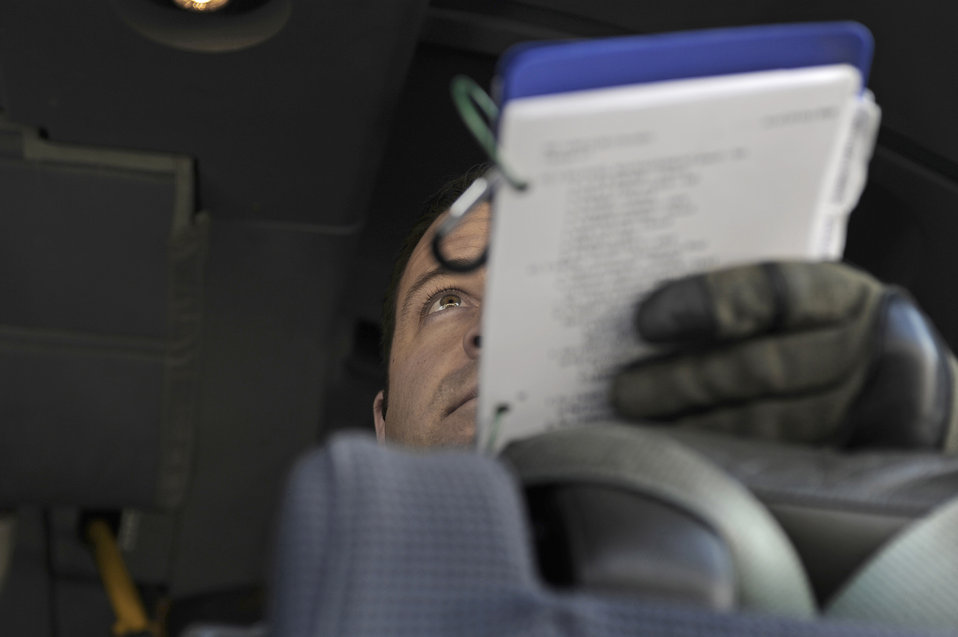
First MC-130J training program takes flight

Tech. Sgt. Justin Day observes a student performing a startup checklist Feb. 7, 2011, at the Harrisburg International Airport, Pa., during familiarization training on an EC-130J Commando Solo. The new EC-130J model will reduce the crew complement from nine to five members. The loadmaster will be the systems expert and handle the duties traditionally performed by a flight engineer. Sergeant Day is an instructor loadmaster at the Air Force Special Operations Training Center.